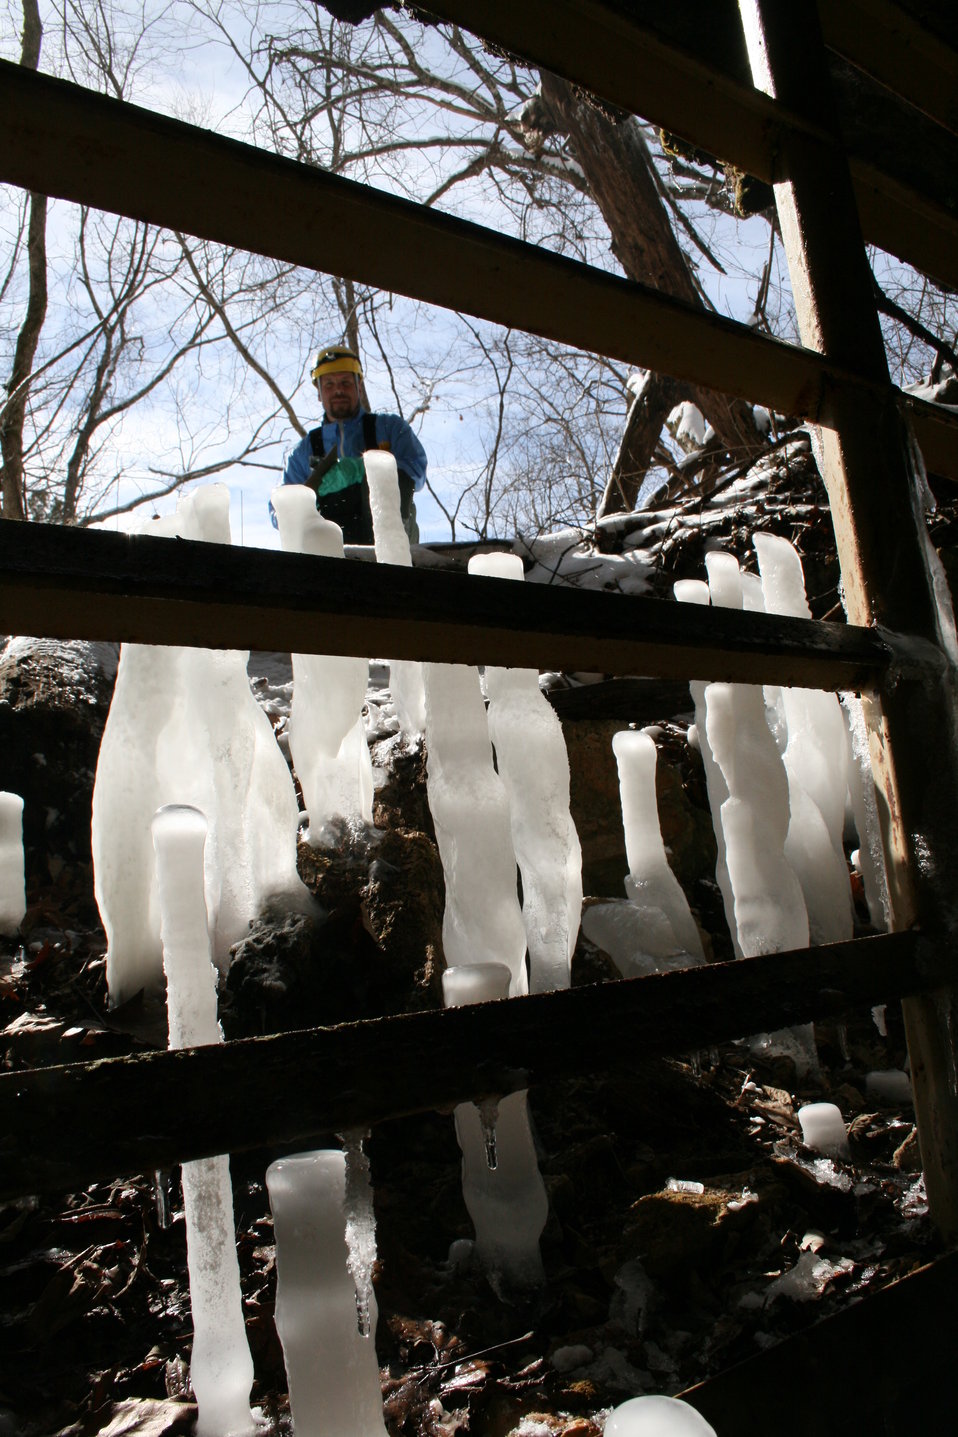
View from inside gated cave, MDC biologist Tony Elliott

View from inside gated cave in Missouri, MDC biologist Tony Elliott outside cave